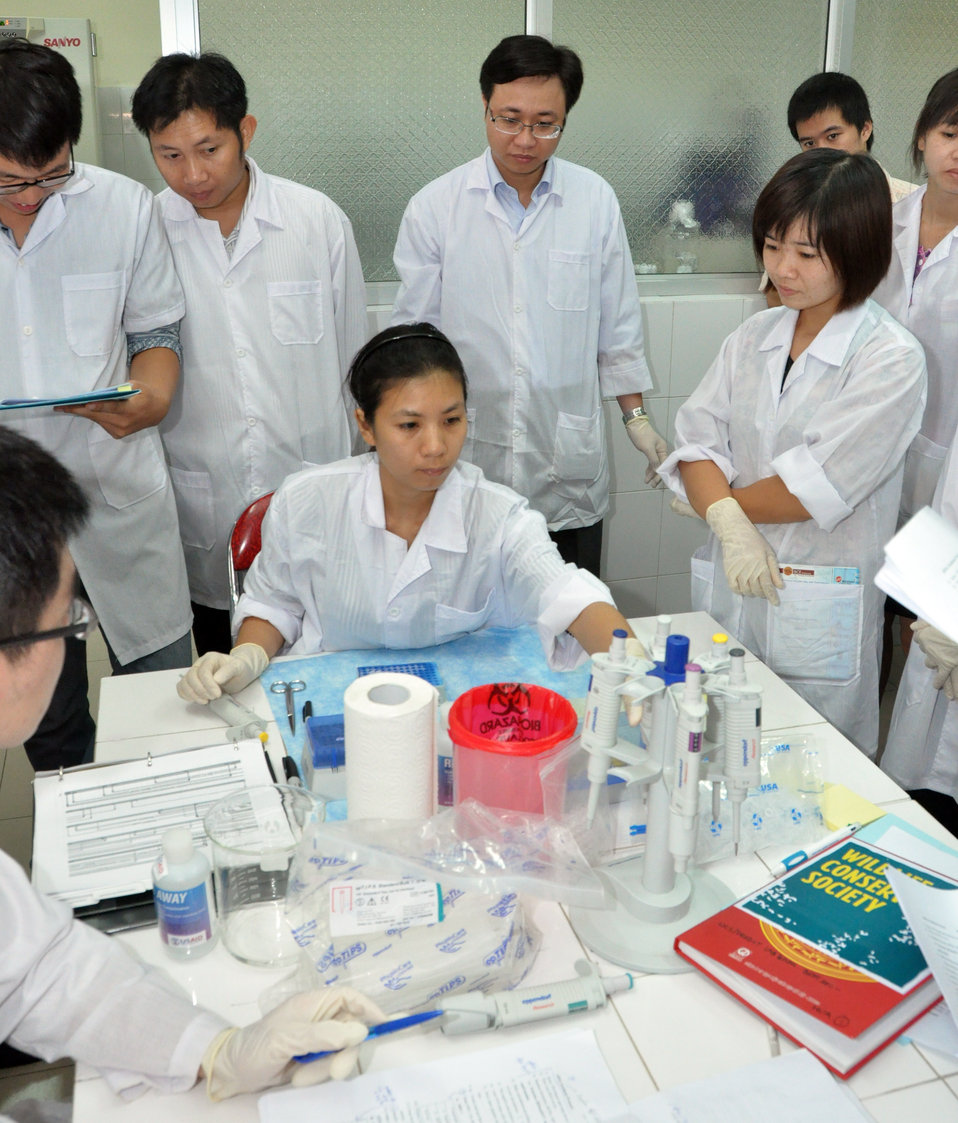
Animal virus detection lab training in Hanoi

Trainee learns how to detect viruses in Hanoi under a USAID program.